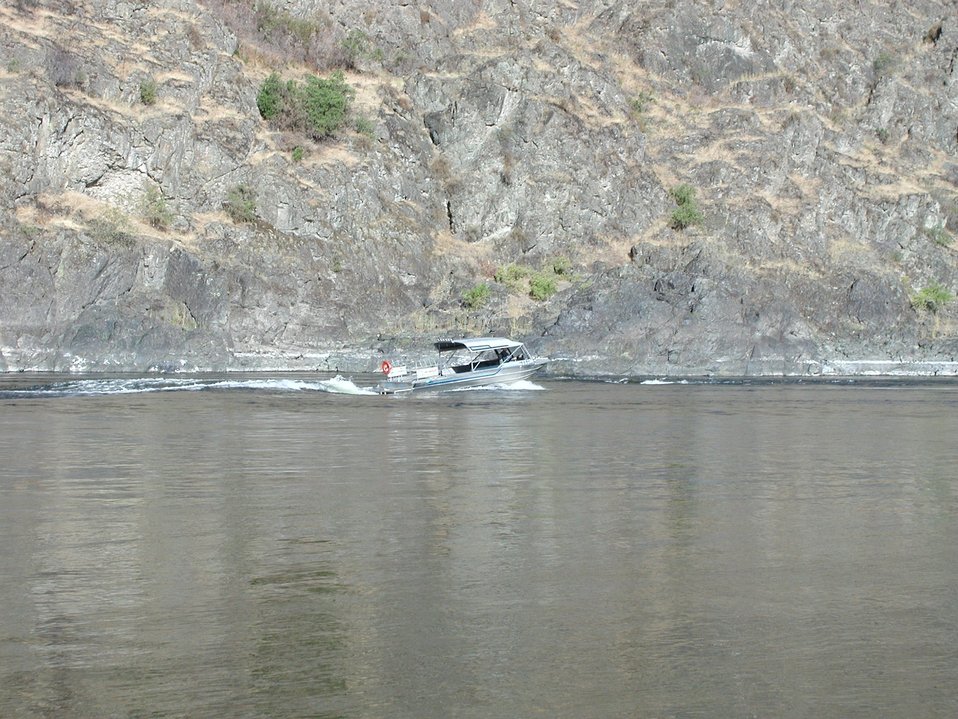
Scenic shot of Lower Salmon River Cottonwood Field Office UCSC Upper Columbia Salmon Clearwater District